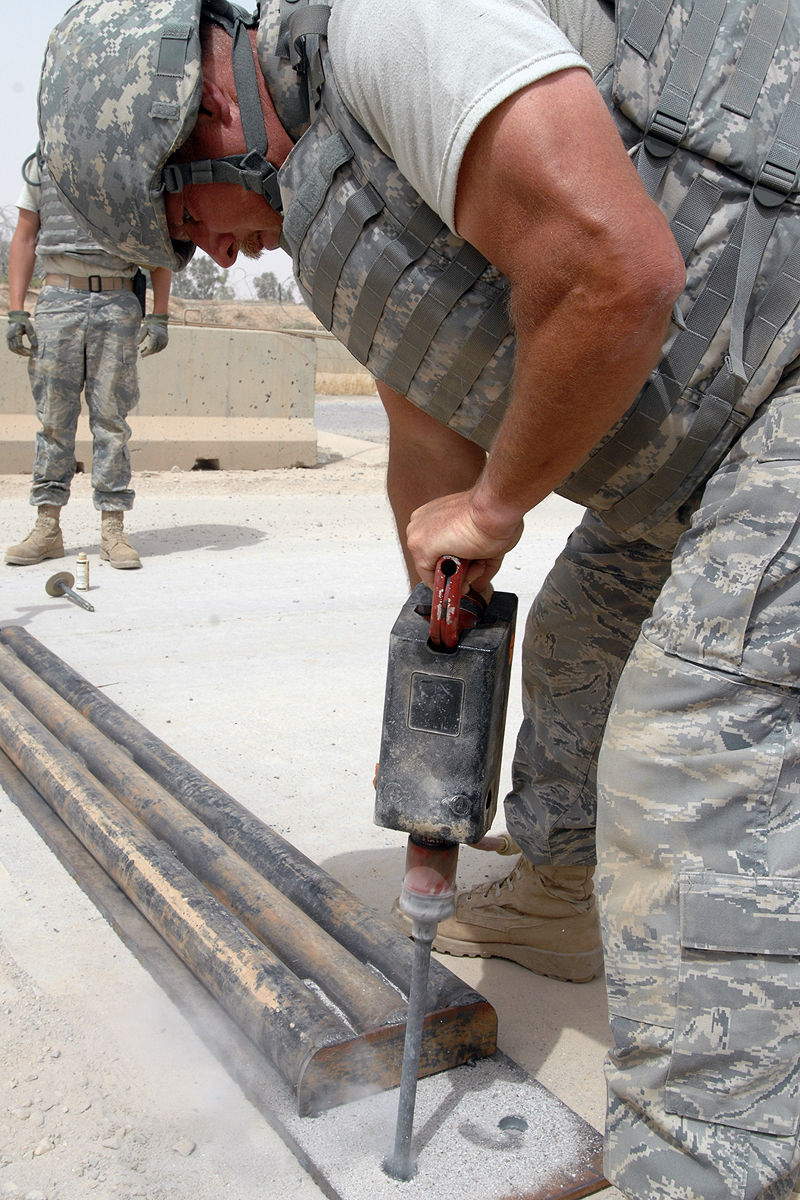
Airmen overcome bumps in road

Master Sgt. Aubrey Miller installs new speed bumps May 22 at Kirkuk Air Base, Iraq. The speed bumps are meant to not only control speed mitigation but also increase the safety of the security-forces Airmen manning the gates and protect more than 6,000 servicemembers deployed here. Sergeant Miller is assigned to the 506th Expeditionary Civil Engineer Squadron. He is a native of Wasilla, Alaska, deployed from Elmendorf Air Force Base, Alaska.